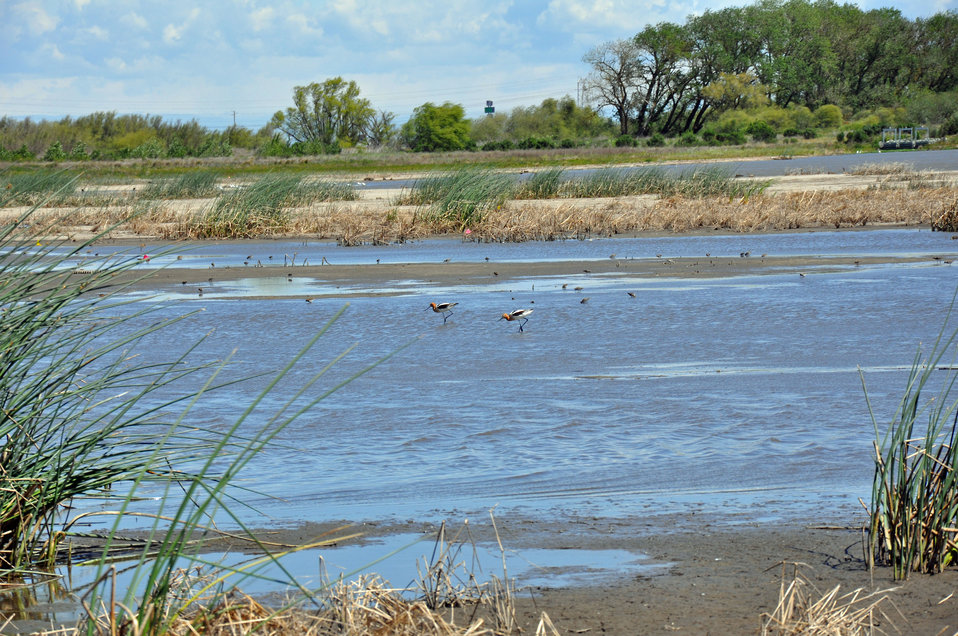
Avocets at Shin Kee Marsh Restoration Area

Located east of Stockton, CA